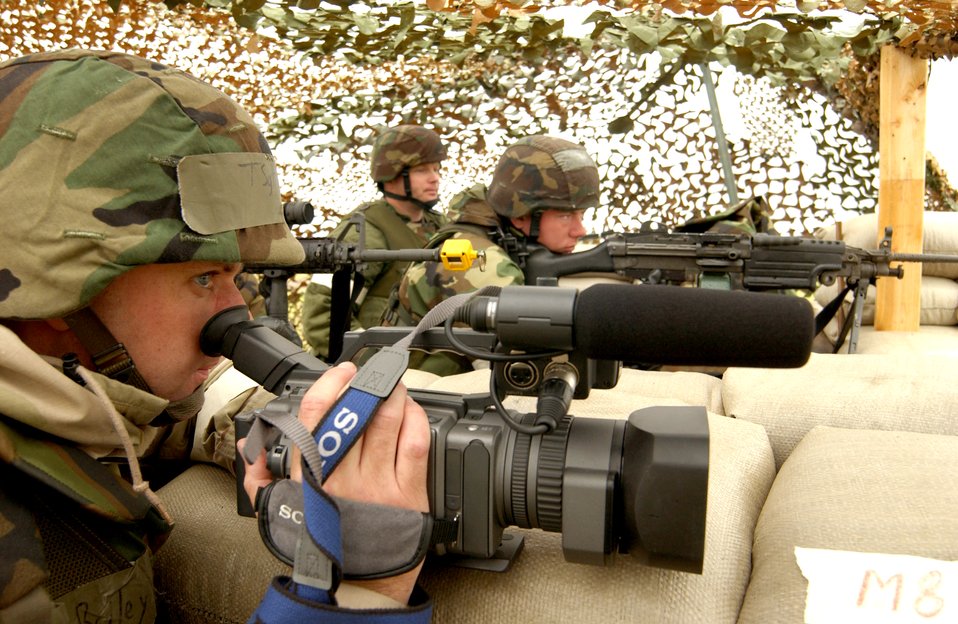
Take aim

FAIRCHILD AIR FORCE BASE, Wash. -- Airmen take aim during an exercise here.